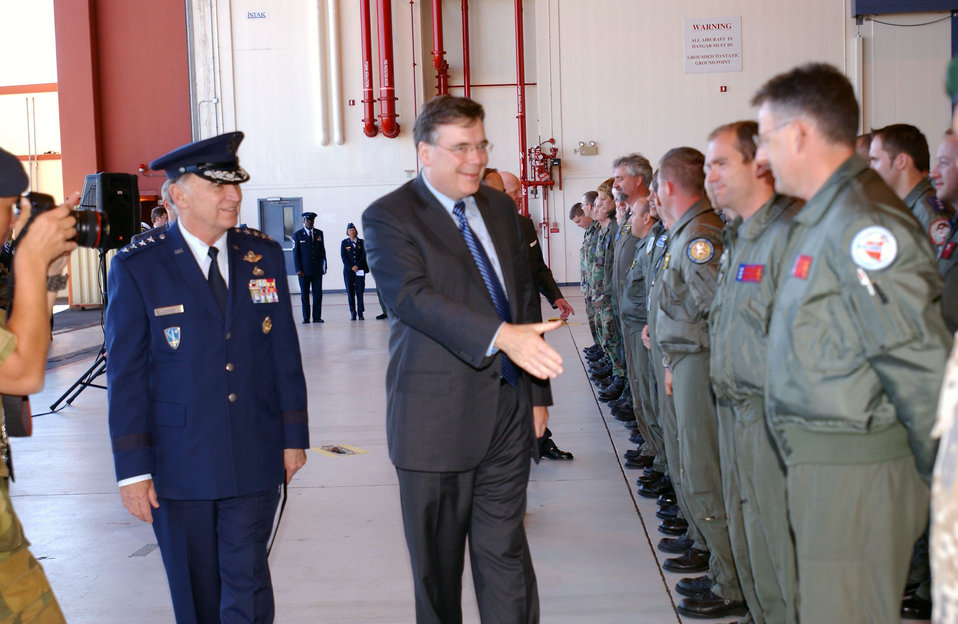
Icelandic defense exercise kicks off

Gen. William T. Hobbins and Iceland Prime Minister Geir H. Haarde greet Airmen and NATO forces Aug. 13 during the opening ceremonies of exercise Northern Viking 2007. The exercise is designed to demonstrate U.S. commitment to the 1951 bilateral U.S.-Iceland defense agreement and reinvigorate air defense command and control capabilities of joint and coalition forces in Iceland. General Hobbins is commander of U.S. Air Forces in Europe.